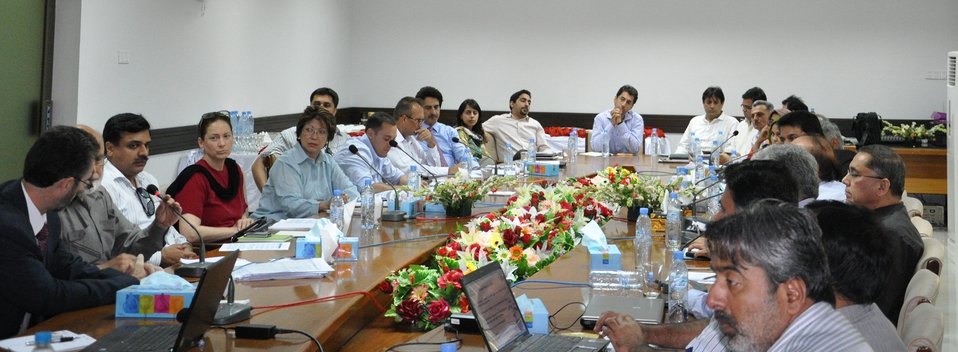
USAID Team meeting with HESCO to discuss ongoing USAID assistance for HESCO

Hyderabad, June 5, 2012: A team of USAID officials led by Ms. Melissa Knight, USAID Energy Office Director, visited Hyderabad Electric Supply Company (HESCO) to discuss the ongoing projects of USAID for HESCO and received briefing from the CEO HESCO, Muzaffar Ali Abbasi about the performance of HESCO. The projects undertaken by USAID Power Distribution Program for HESCO were also discussed and results achieved so far were presented by HESCO. The USAID team along with HESCO officials then planted a tree at HESCO employee colony.